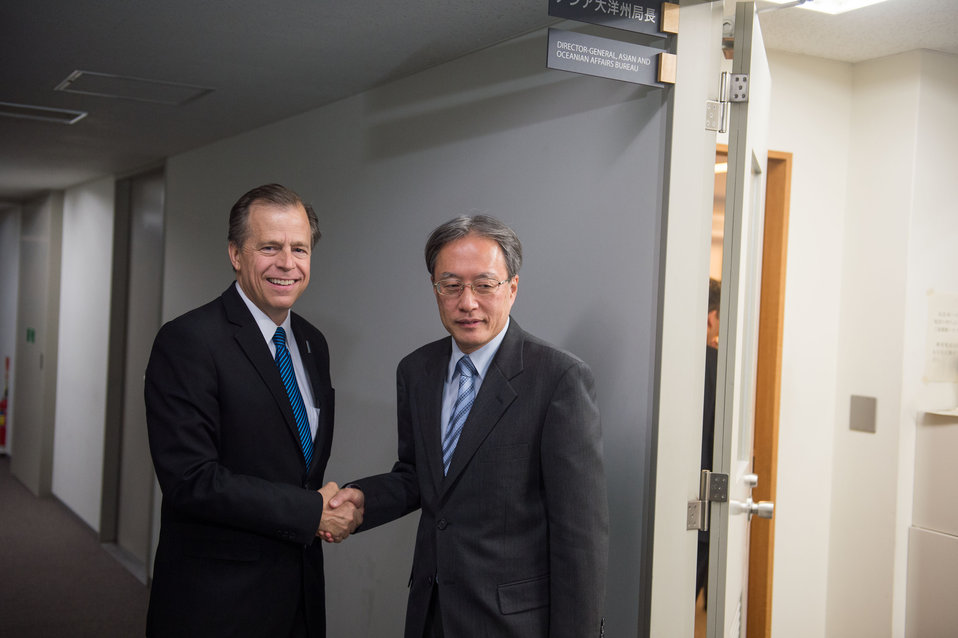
Special Representative for North Korea Davies Meets With Japan's Junichi Ihara

Special Representative for North Korea Policy Glyn Davies is greeted by Mr. Junichi Ihara, Director-General of the Asian and Oceanian Affairs Bureau, Ministry of Foreign Affairs, before their meeting in Tokyo, Japan, on November 25, 2013.